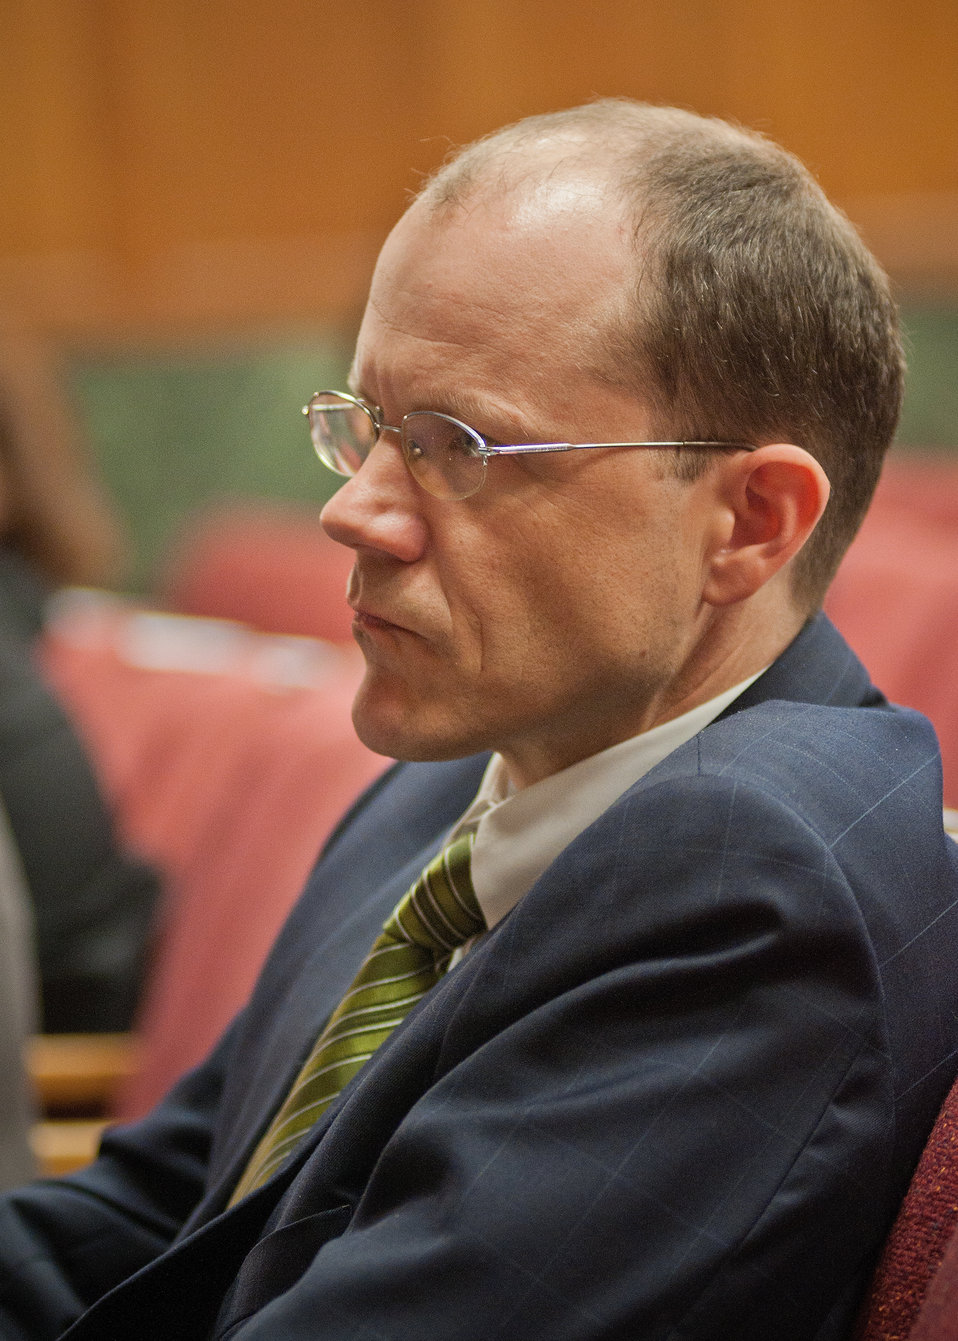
Doug O’Brien, Administrator, Rural Development listens to recordings of retiring employees reflecting on their accomplishments during their tenure with the agency, at the Rural Development Celebration of Service held at the United States Department of Agriculture in Washington, DC, on Wednesday, November 16, 2011.